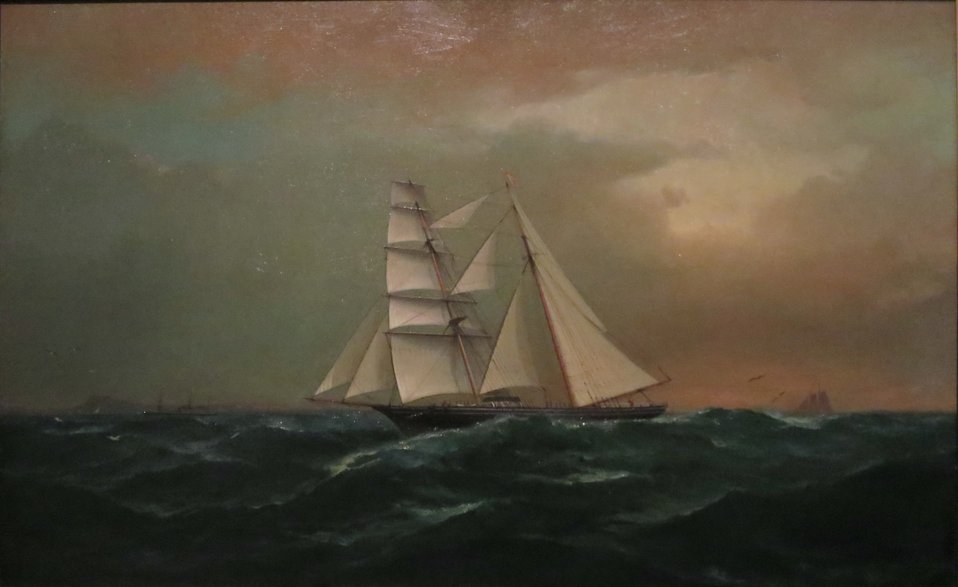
'Brigantine William G. Irwin off Diamond Head', oil on canvas painting by Gideon Jacques Denny